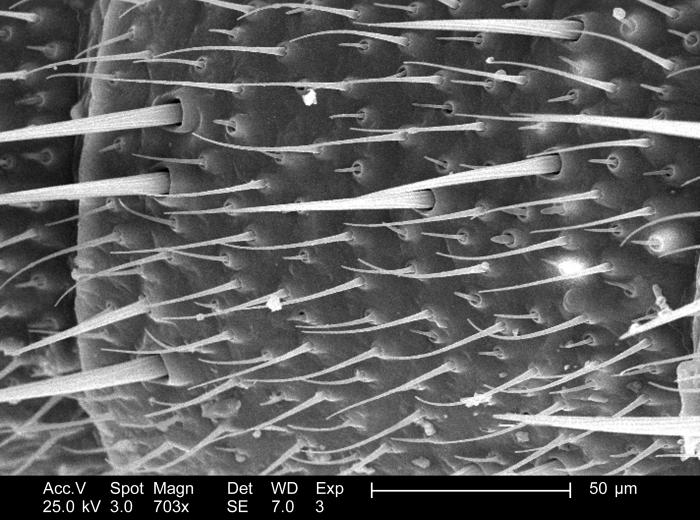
This moderately high-powered scanning electron micrograph (SEM), magnified 703x, revealed some of the ultrastructural details displayed along the exterior of the segmented length of an unidentified dragonfly's antenna. This insect was found deceased on the grounds of the Decatur, Georgia suburbs, and after its demise, retained a morphologically pristine state.